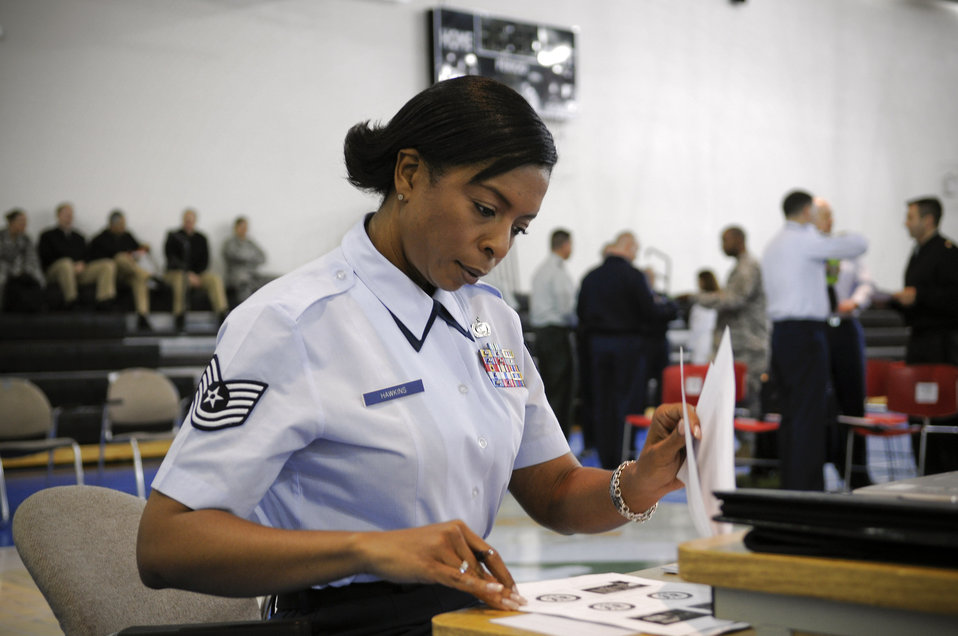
DOD inaugural committee moves into high gear

Tech. Sgt. Marica Hawkins prepares for a large scale map exercise Nov 6 at Fort Lesley J. McNair, Washington, D.C. The map exercise will designate all participant locations for the 56th Inaugural Day period in January 2009. Sergeant Hawkins is a Armed Forces Inaugural Committee member.